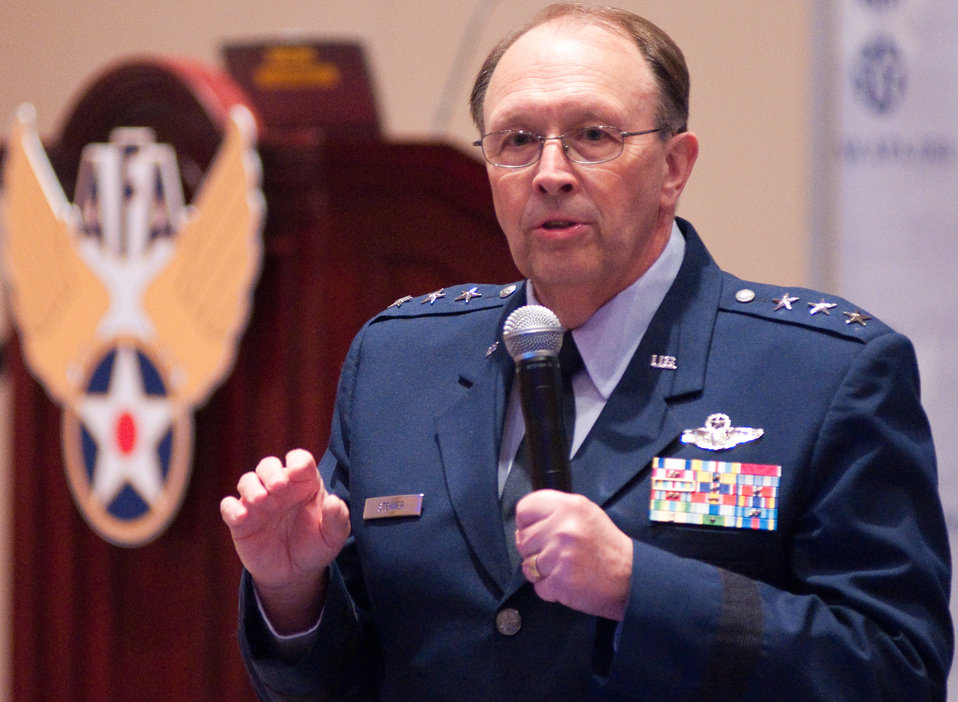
General Stenner at AFA

Lt. Gen. Charles E. Stenner Jr., the commander of the Air Force Reserve Command and chief of the Air Force Reserve, speaks to a standing-room only crowd about military structure for the 21st century Sept. 13, 2010, during the Air Force Association Air & Space Conference and Technology Exposition 2010 at National Harbor in Oxon Hill, Md.